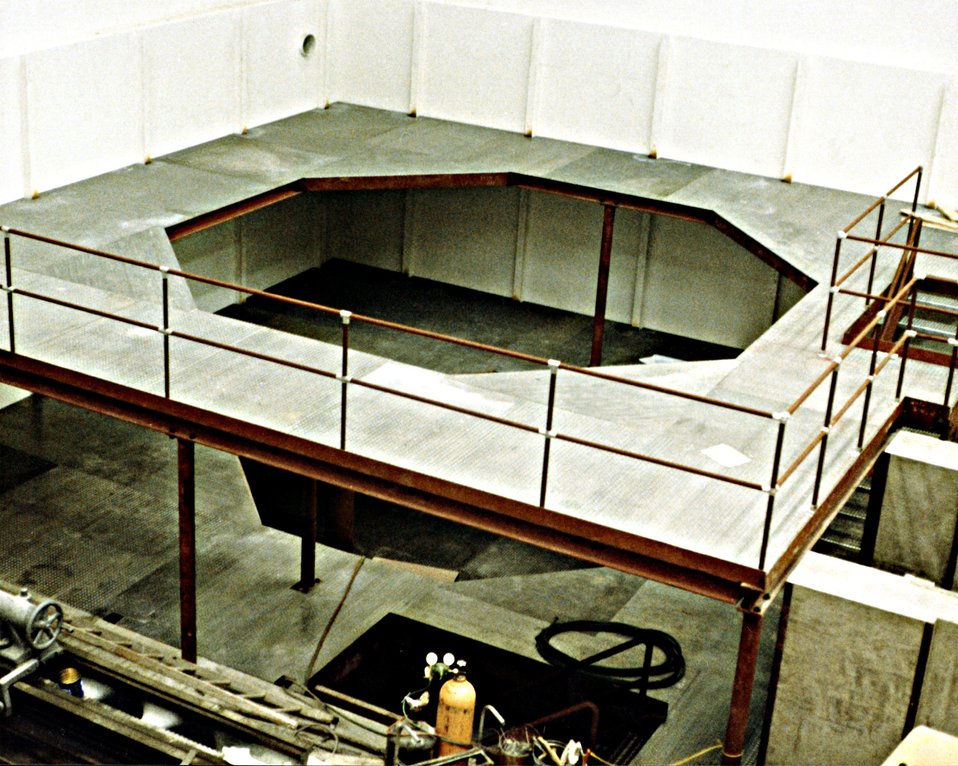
THE K800 MAGNET PIT AND PLATFORM WHERE THE 265-TON MAGNET YOKE WILL BE PLACED.

THE NATIONAL SUPERCONDUCTING CYCLOTRON LABORATORY IS BEING CONSTRUCTED FOR DOE AT MICHIGAN STATE UNIVERSITY. THE FACILITY IS BASED ON A NEW KIND OF PARTICLE ACCELERATION, THE SUPERCONDUCTING CYCLOTRON, WHICH WILL BE USED TO STUDY THE NUCLEAR REACTIONS BETWEEN 'HEAVY IONS'. USING ULTRA COLD, SUPERCONDUCTING TECHNOLOGY FOR THE POWER COILS HAS RESULTED IN A COMPACT CYCLOTRON WITH A UNIQUELY HIGH ENERGY GAIN. THE LABORATORY IS AN EXTENSION OF AN EXISTING FACILITY AND WILL PROVIDE A SECOND-STEP SUPERCONDUCTING CYCLOTRON AND ADDITIONAL EXPERIMENTAL AREAS, BEAM TRANSPORT SYSTEMS, RADIATION SHIELDING, AND SUPPORT AREAS.